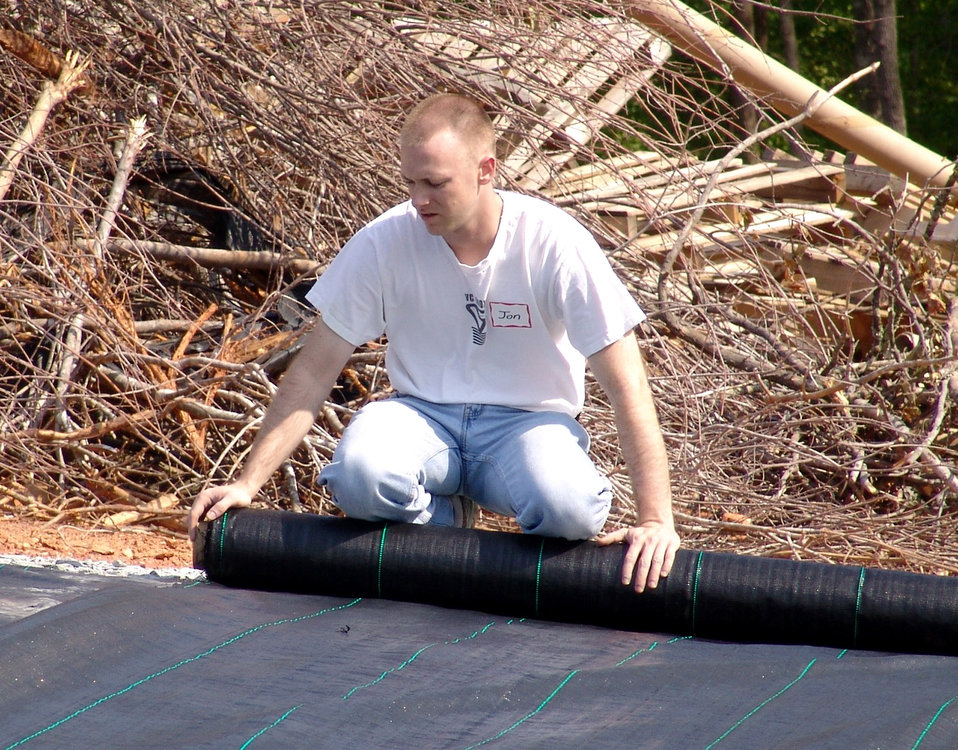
Airmen take on landscaping projects for children's sake

Staff Sgt. Jonathan Bish lays down a landscaping tarp that will become a nursery for hundreds of plants April 26 at Victory Junction Gang Camp in North Carolina. Sergeant Bish was one of 27 volunteers who volunteered to help the camp's landscaping team build a nursery, move hundreds of plants and complete the landscaping around the camp's tree house. Sergeant Bish is a 337th Recruiting Squadron enlisted accessions recruiter from Hickory, N.C.